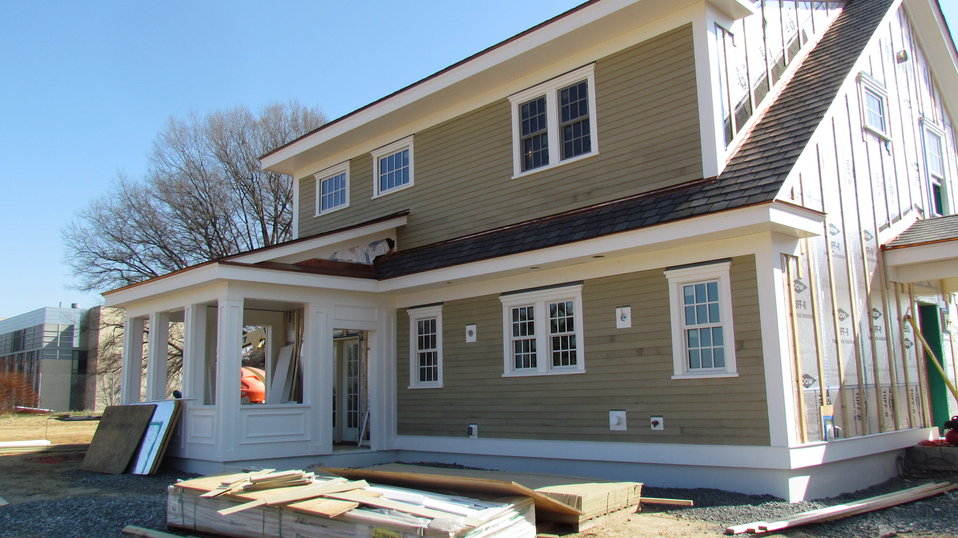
Photo showing the installation of siding on the rear of the facility.